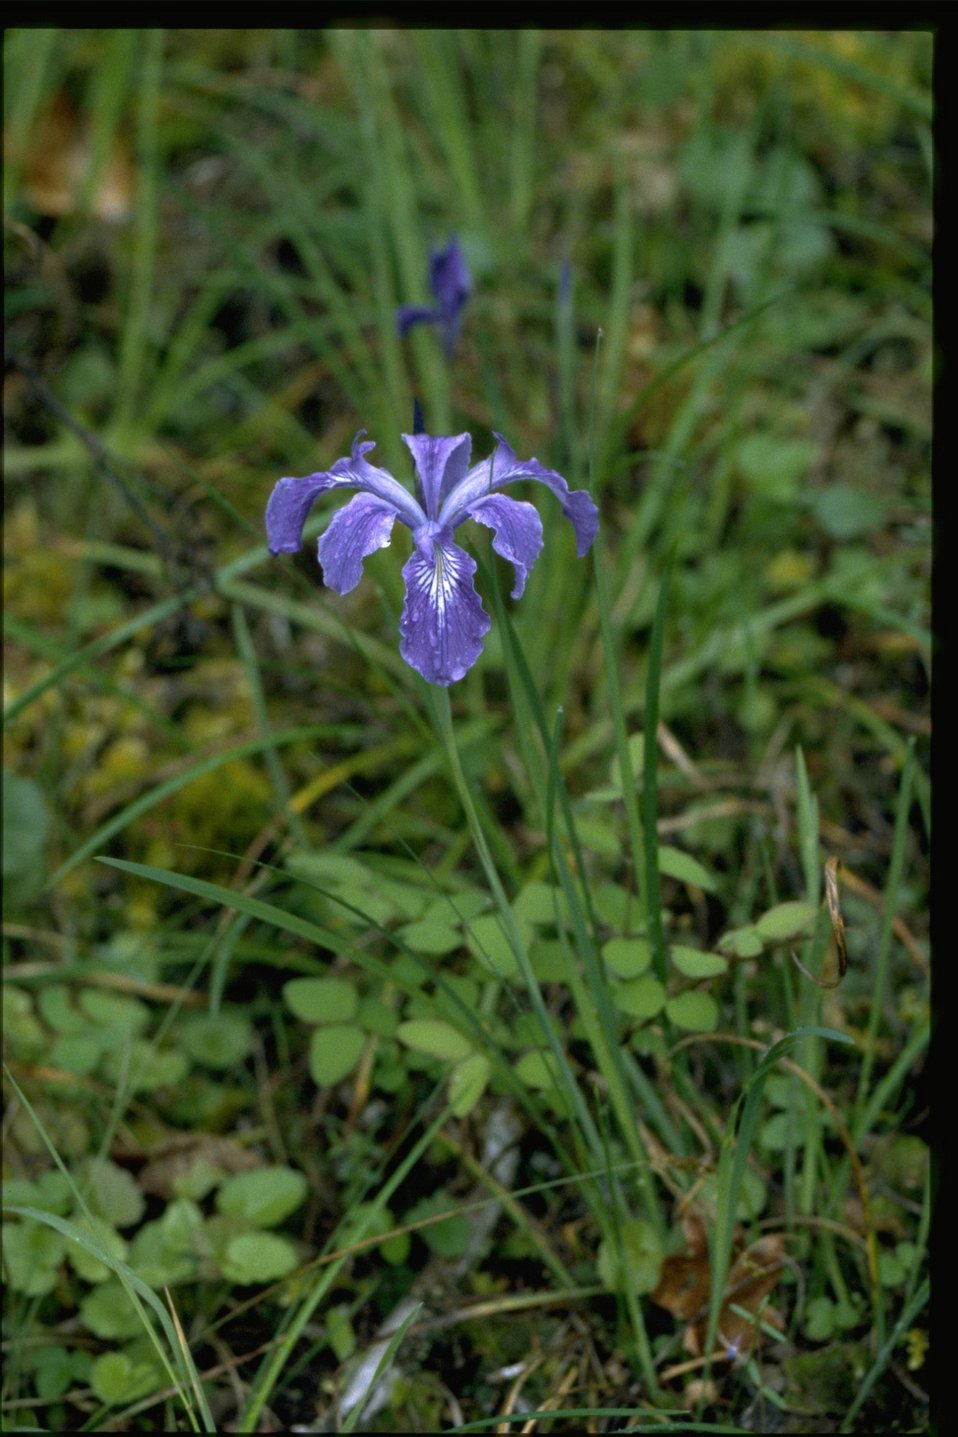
Medium shot of Iris tenax.